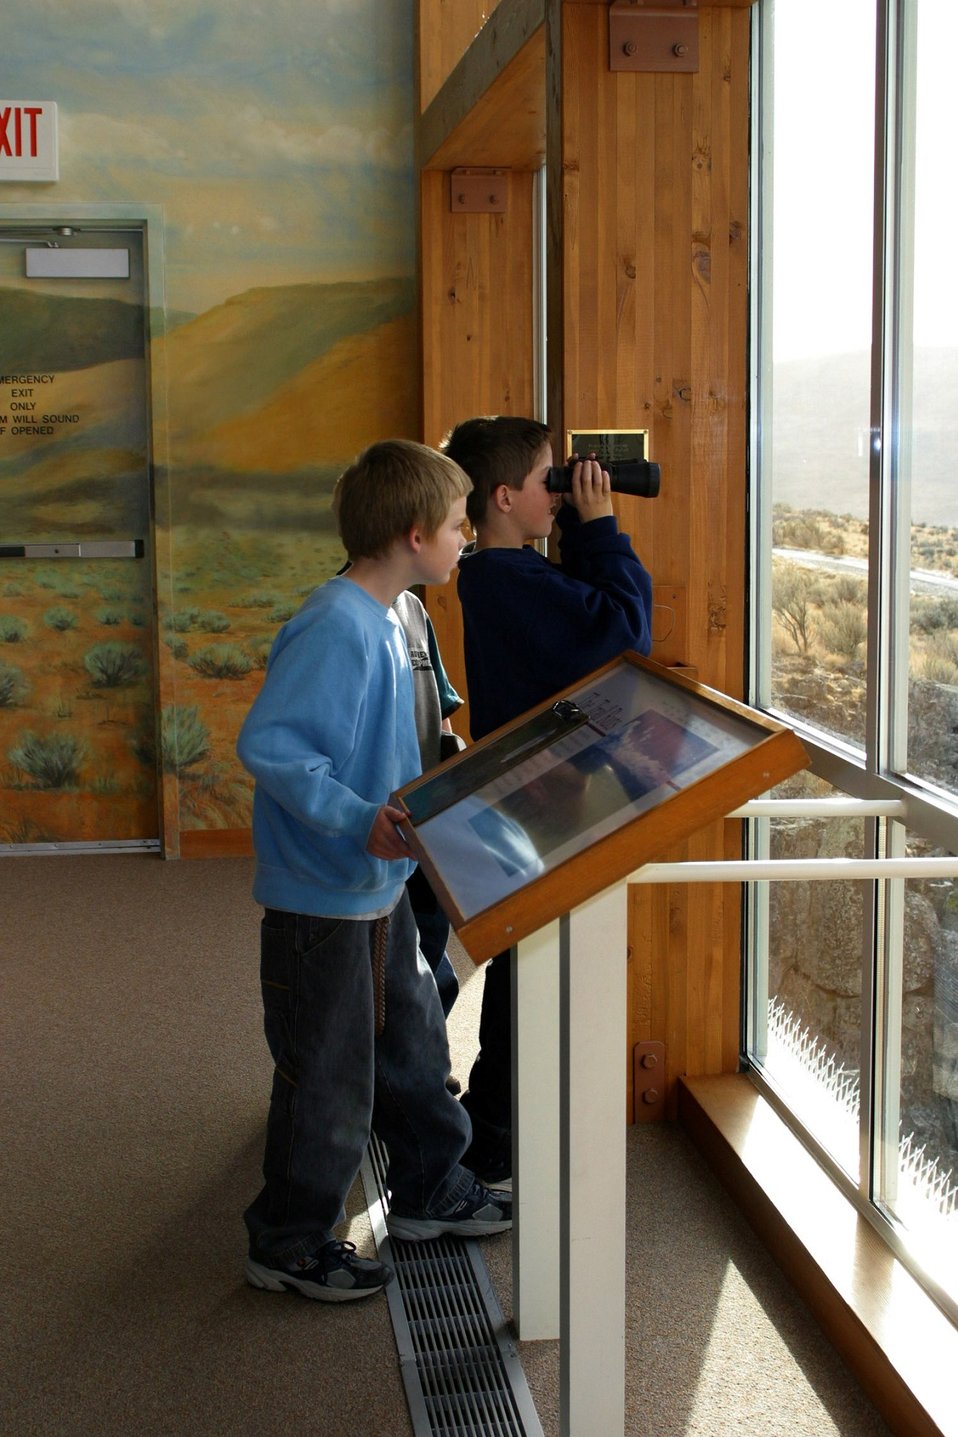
Hundreds of school children visit the National Historic Oregon Trail Interpretive Center every year.